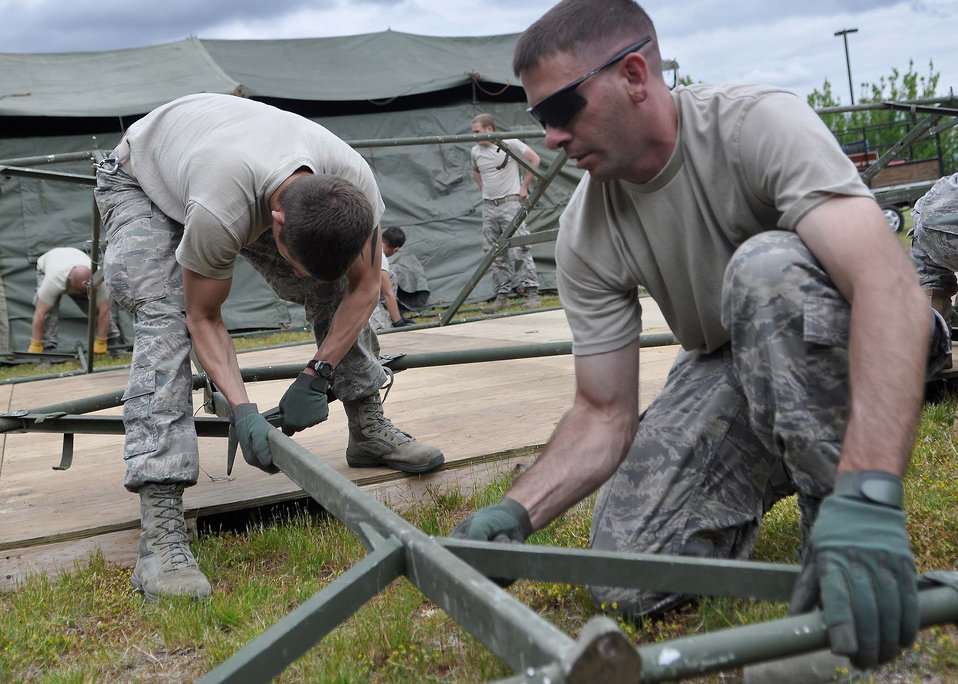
Air Mobility Command Rodeo

Airmen set up tents June 21, 2011, at Joint Base Lewis-McChord, Wash.